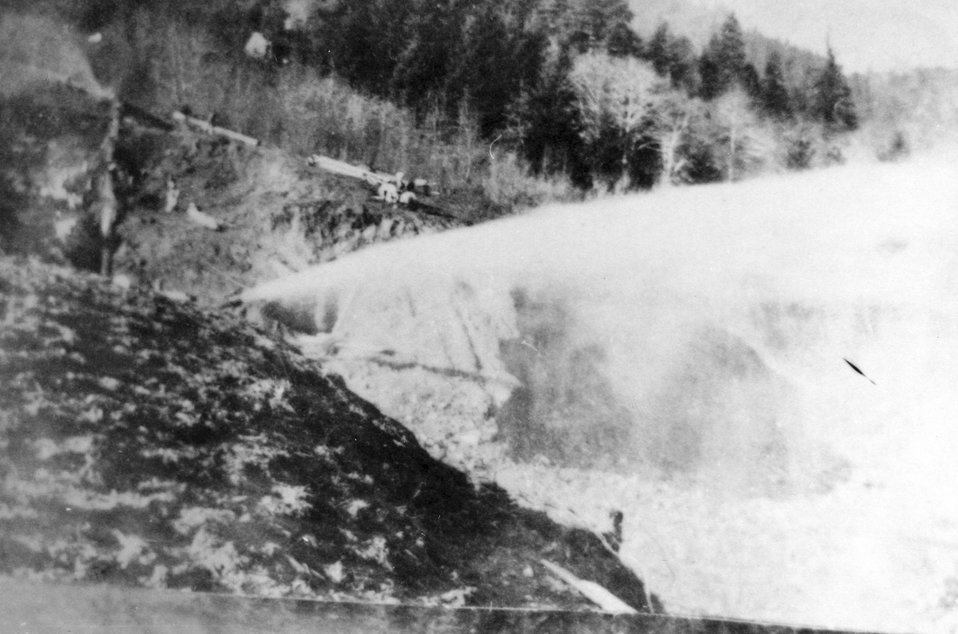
Placer Gold Mining at Mule Creek